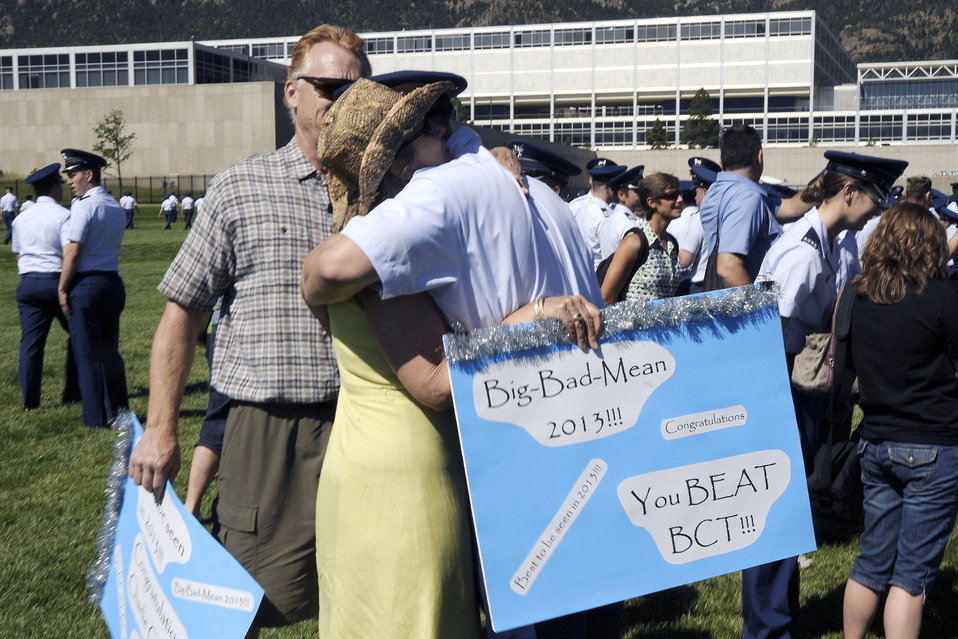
Acceptance Parade

USAF ACADEMY, CO--Cadet 4th Class Crouse, a member of the Academy's Class of 2013, receives congratulations from his parents following the Acceptance Parade Wednesday . The parade marks the official end of Basic Cadet Training and formally welcomes the new class into the cadet wing.